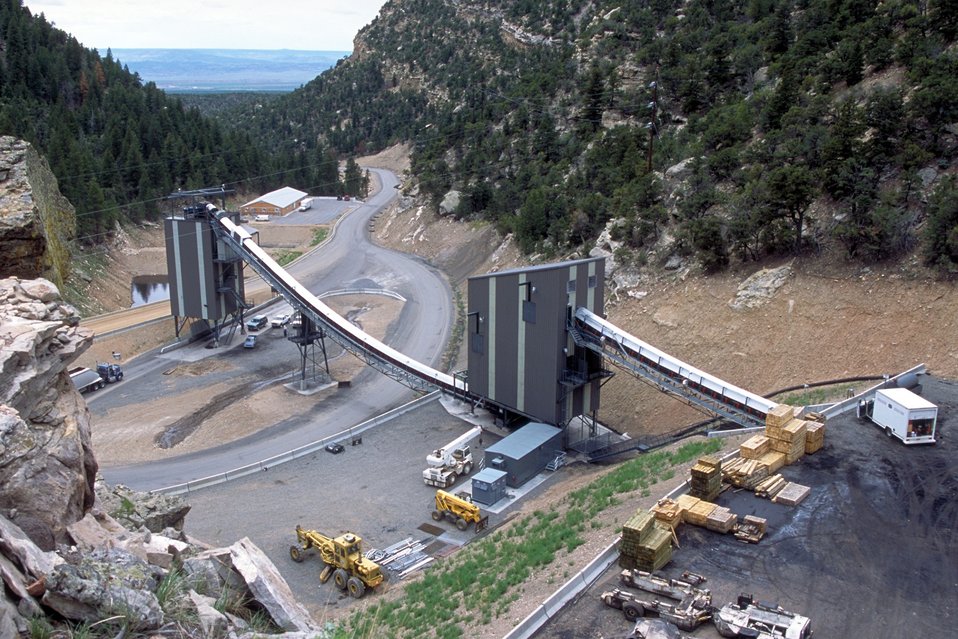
Coal production near Price, Utah.